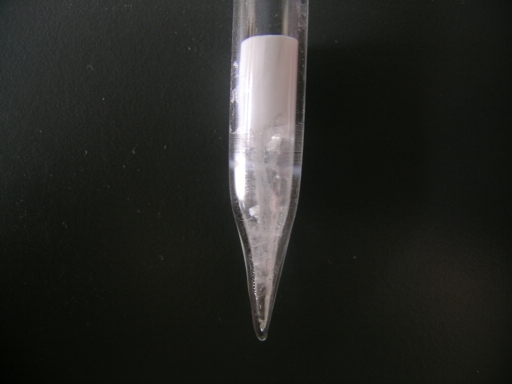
CsCdBr3 single crystal grown by Bridgeman technique, Istanbul Technical University.